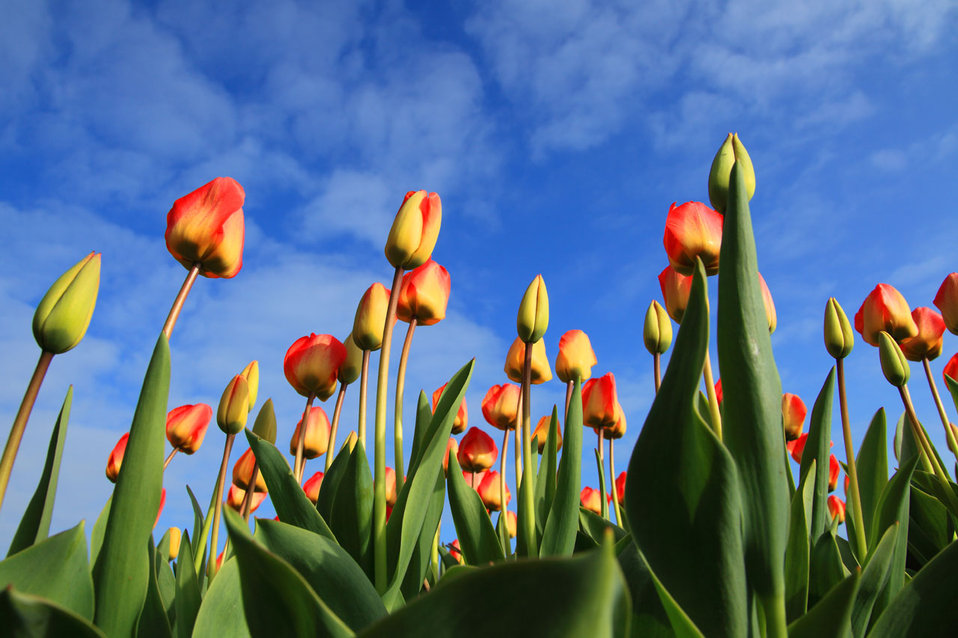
Colorful tulips and blue sky

Colorful tulips against blue sky.